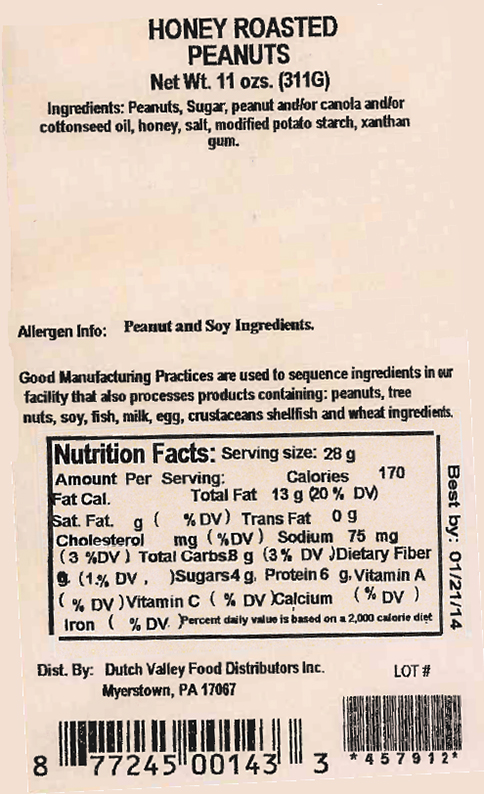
RECALLED – Honey Roasted Peanuts

September 12, 2013 – Product Recall – Dutch Valley Food Distributors, Inc. Announces a Voluntary Nationwide Recall of Honey Roasted Peanuts, for Undeclared Milk and Wheat.